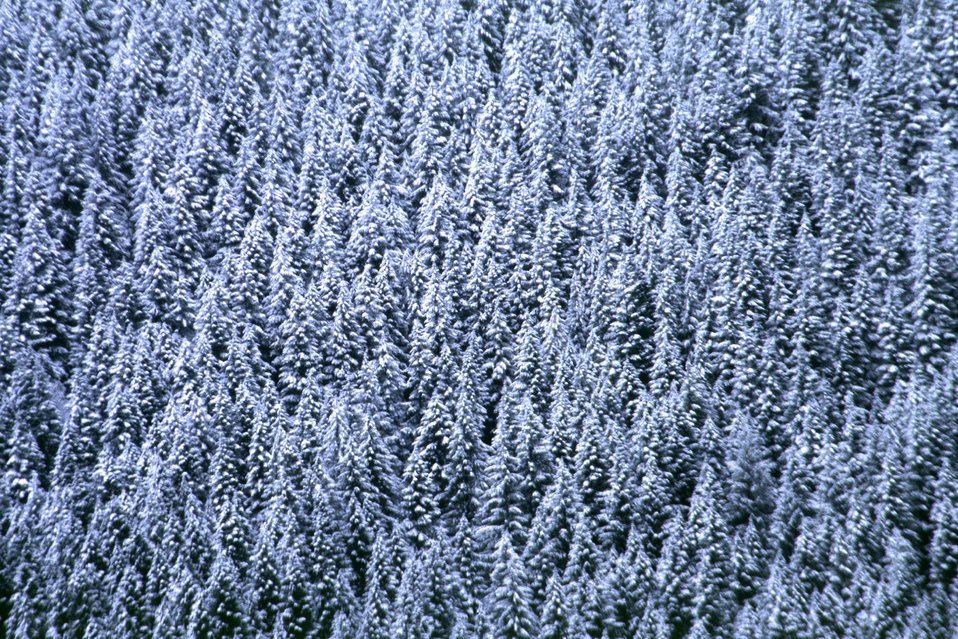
Mid Winter forest scene in the Mollala Corridor.